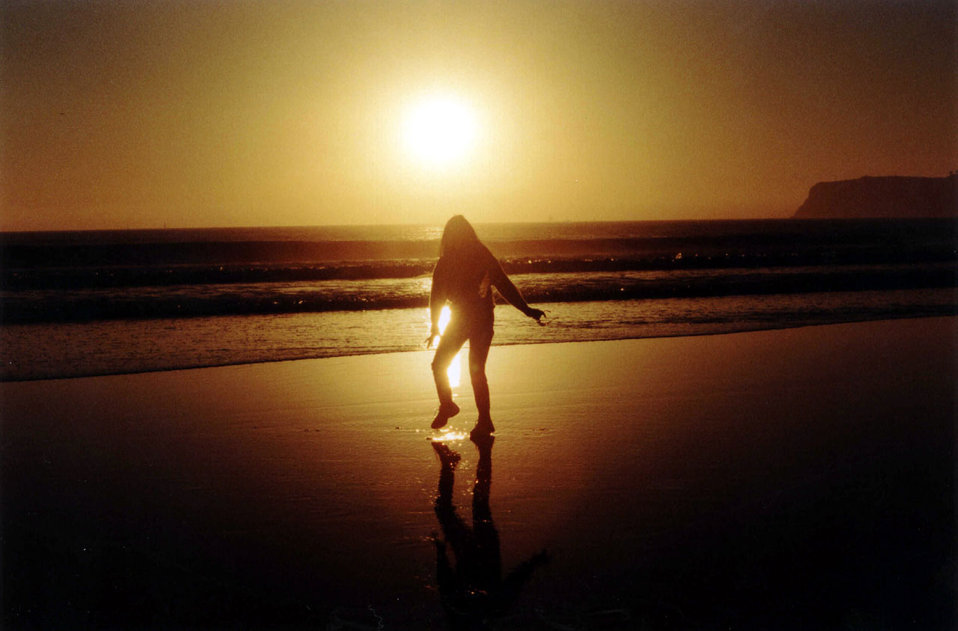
Woman on coronado beach at sunset

Outline of woman on the beach in the sunset.